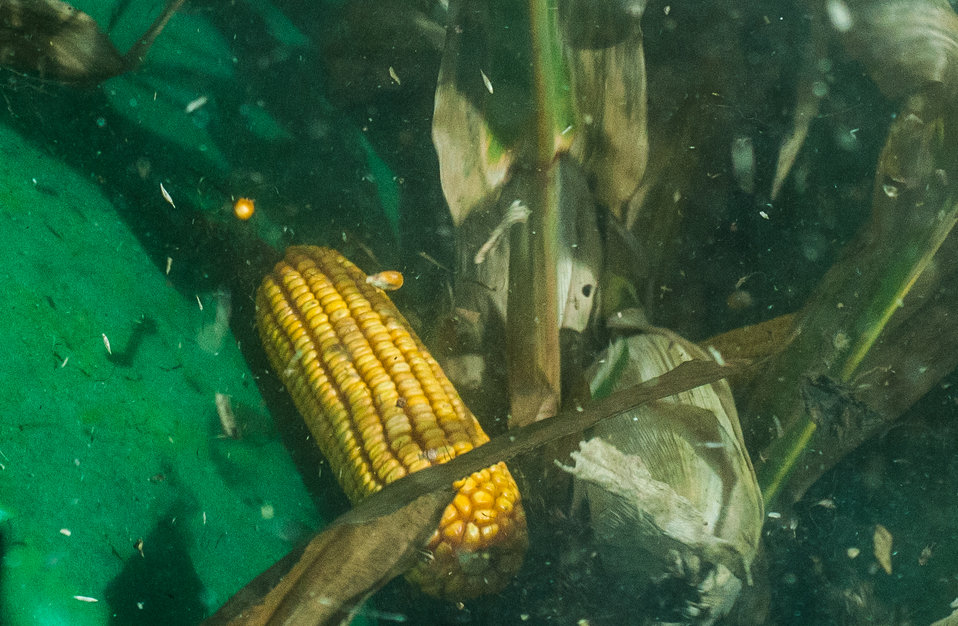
The view out of the operators cab of a corn harvester as corn stalks are cut and the kernels and cornstalks separated during the harvest on Friday, Sept. 20, 2013 harvest, at the John N. Mills & Sons farm; a family owned business located in the Hanover and King William Counties of Virginia. Pleasant Level Farm was the original farm and a Land Grant from King George III of England to Nicholas Mills in 1725. The original acreage has never left the Mills family name and continues to be farmed by the family. Now the farm covers 5,744 acres that produce corn, wheat, soybeans, barley, hay and timber, and pastures a large herd of beef cattle. They have been using conservation and stewardship practices since the 1960s. Some of the efficient practices include no-till planting methods and cover crops to reduce soil erosion and prevent the leaching of nutrients into ground water, as well as livestock stream exclusion. The farm has several conservation easements that aids in the preservation and restoration of wetlands and waterways. For information about the U.S. Department of Agriculture (USDA), please go to www.usda.gov.